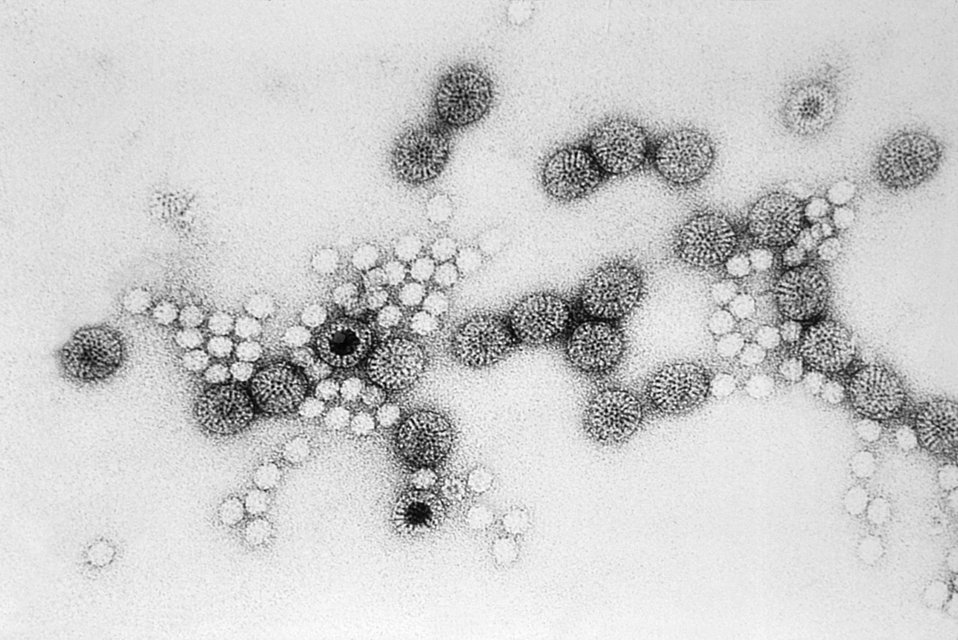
This electron micrograph reveals a number of RNA rotavirus virions, and a number of unknown, 29nm virion particles.